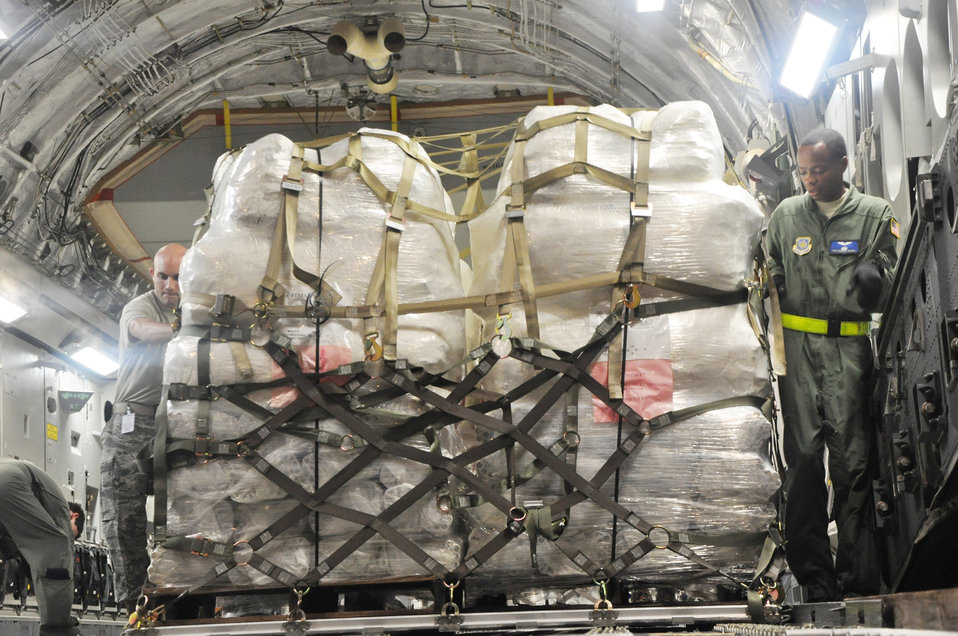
McChord Airmen complete second humanitarian airlift to American Samoa

Airmen from McChord Air Force Base, Wash., and Hickam AFB, Hawaii, and Air Mobility Command civilians offload Federal Emergency Management Agency cargo from a C-17 Globemaster III Oct. 10, 2009, at Pago Pago International Airport, American Samoa.